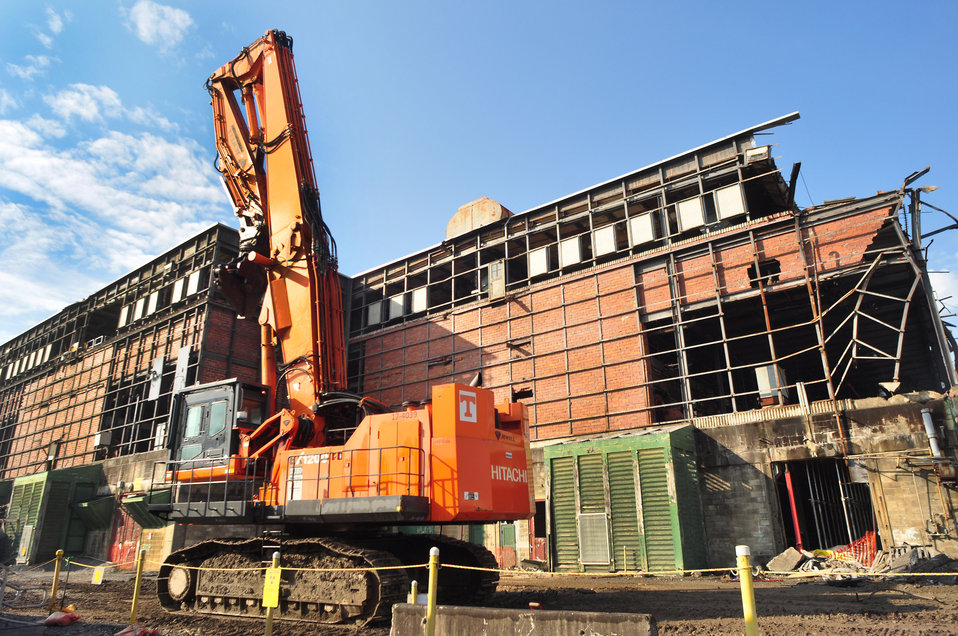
D and D Clean Up Work at K-25 Oak Ridge 2013

13-124-148 DOE photo Lynn Freeny 10-30-2013 Oak Ridge Tennessee